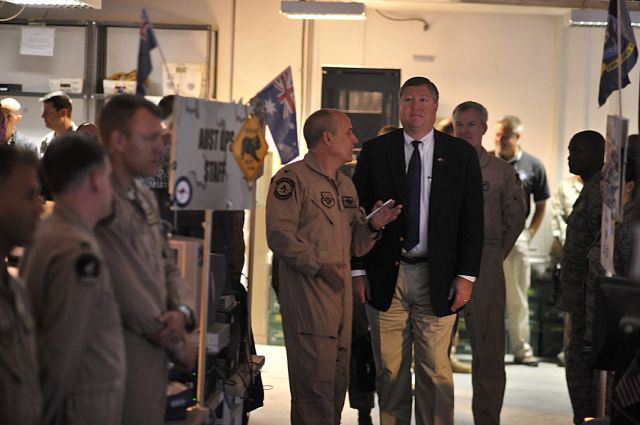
Secretary Donley visits the CAOC

Col. Doug Anderson, director of combat operations for the Combined Air and Space Operations Center, explains to Secretary of the Air Force Michael Donley Oct. 11 how airpower is delivered on a daily basis in Iraq, Afghanistan and the Horn of Africa.